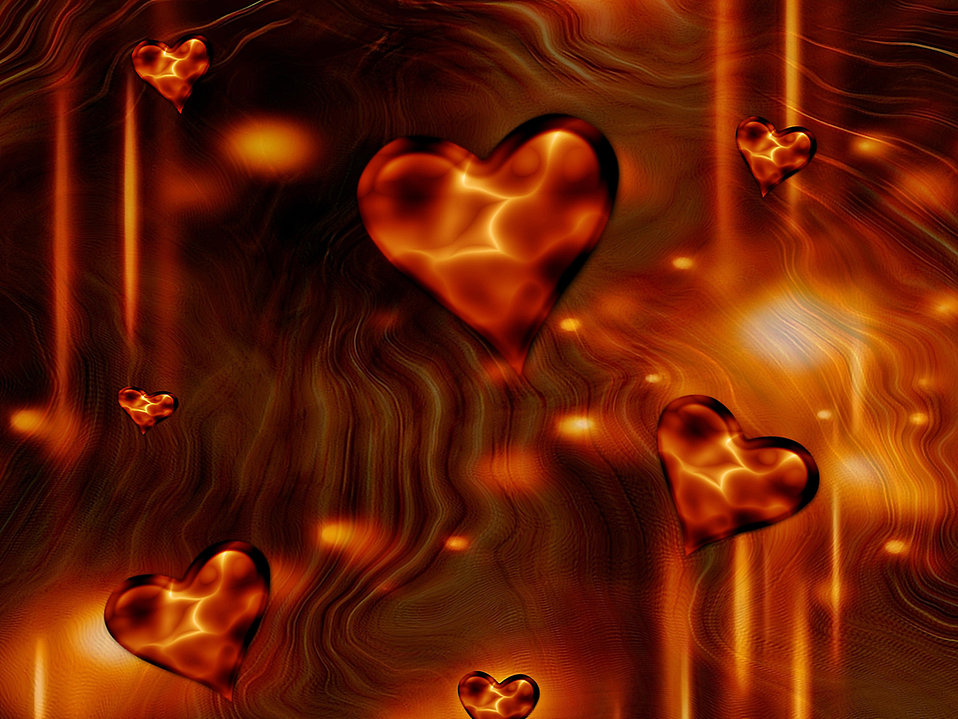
Fire heart

Background.